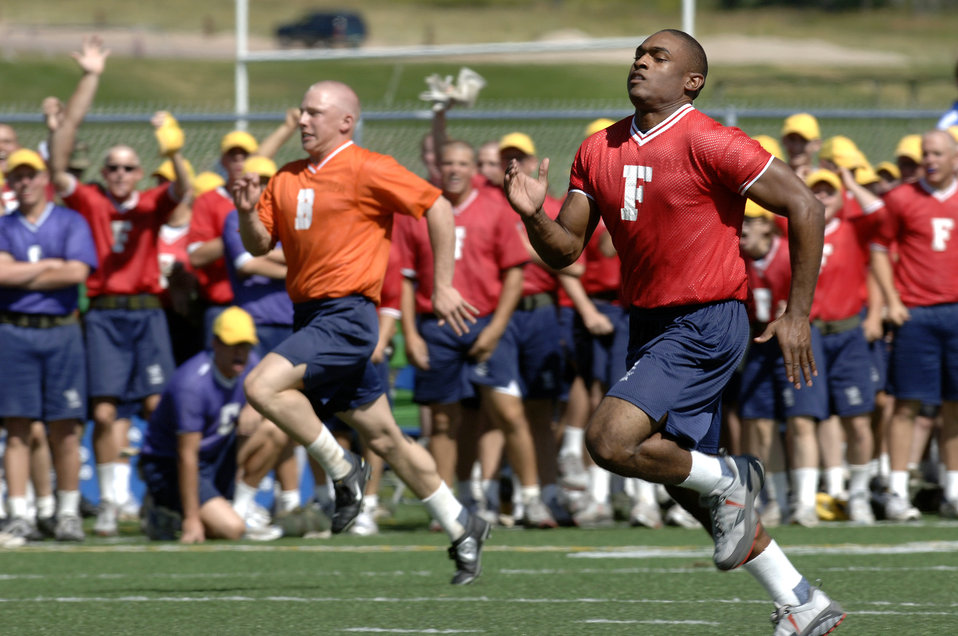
Cadets team up at field day

Basic cadet trainees sprint across the field at Field Day July 14 at the U.S. Air Force Academy in Colorado. New cadets are in their first month of training at the Academy and are learning honor, discipline and integrity in addition to physical fitness.